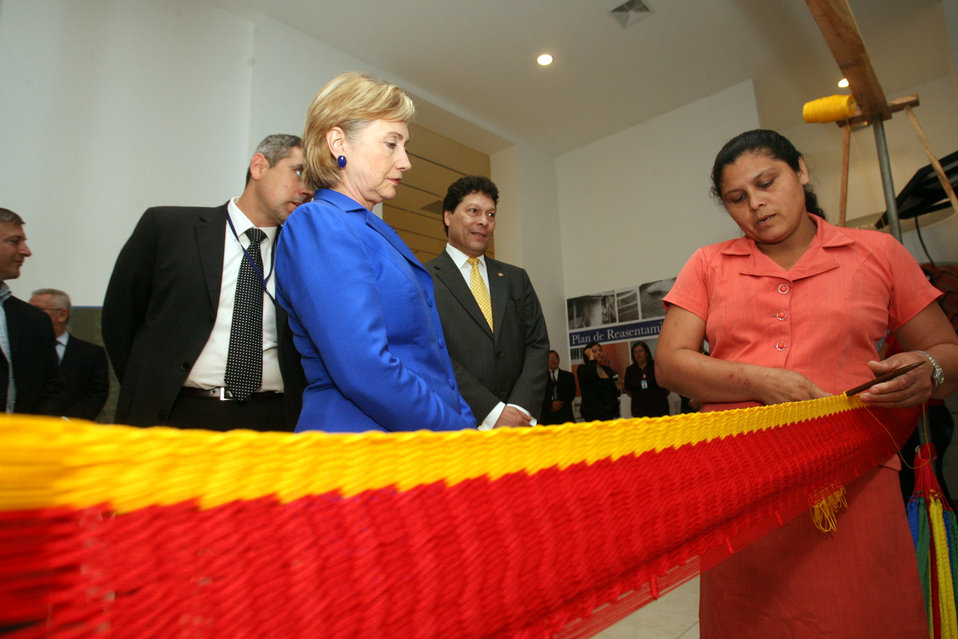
Secretary Clinton Observes Millennium Challenge Corporation Beneficiaries

U.S. Secretary of State Hillary Rodham Clinton observes one of the beneficiaries of the Millennium Challenge Corporation (MCC) Compact in El Salvador May 31, 2009. The $461 million dollars MCC Compact will benefit the Northern zone of El Salvador. State Department photo by Salomon Vasquez, U.S. Embassy San Salvador]